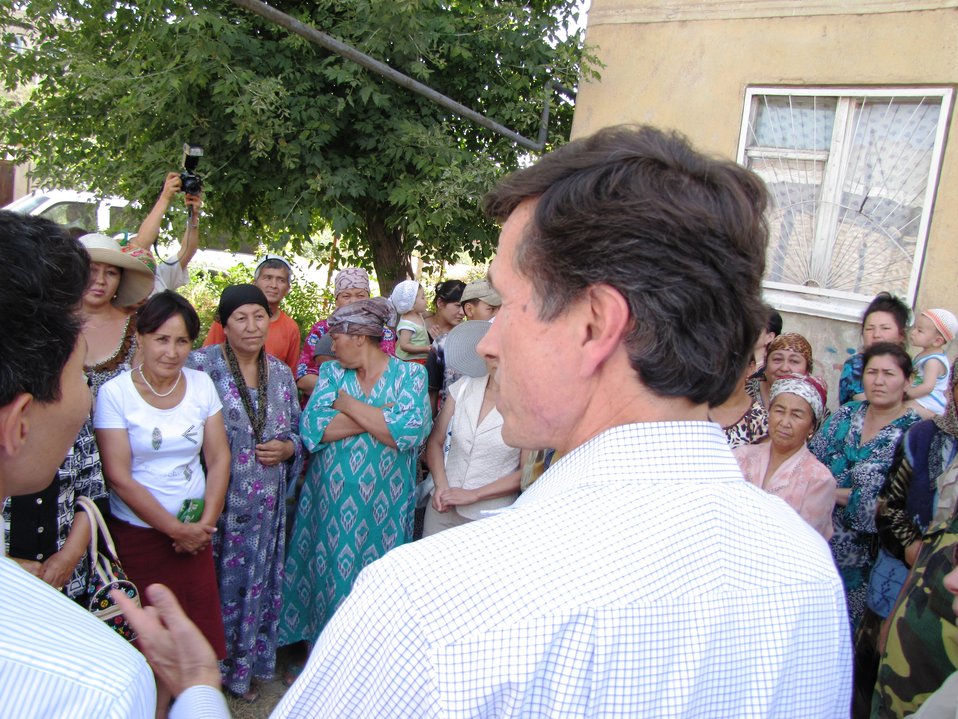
Assistant Secretary Blake Speaks With Ethnic Uzbek Women

U.S. Assistant Secretary for South and Central Asian Affairs Robert O. Blake speaks with ethnic Uzbek women in Osh, Kyrgyzstan, on July 19, 2010.